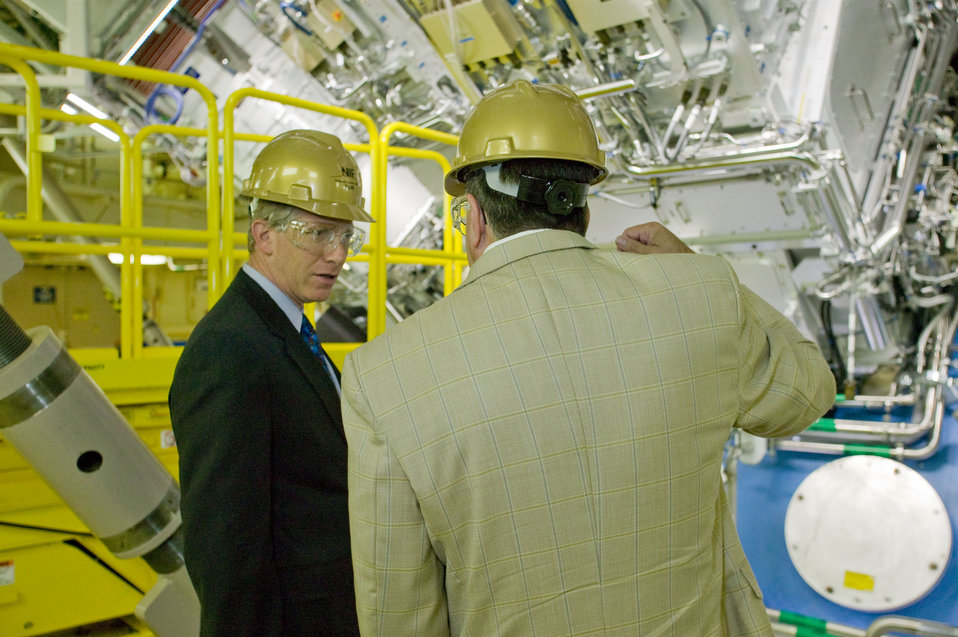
Deputy Secretary of Energy Daniel Poneman

Left to right, Adam Cohen, Tomas De La Rubia, Alice Williams, Daniel
Poneman, George Miller, Phil Hill, Bruce Goodwin